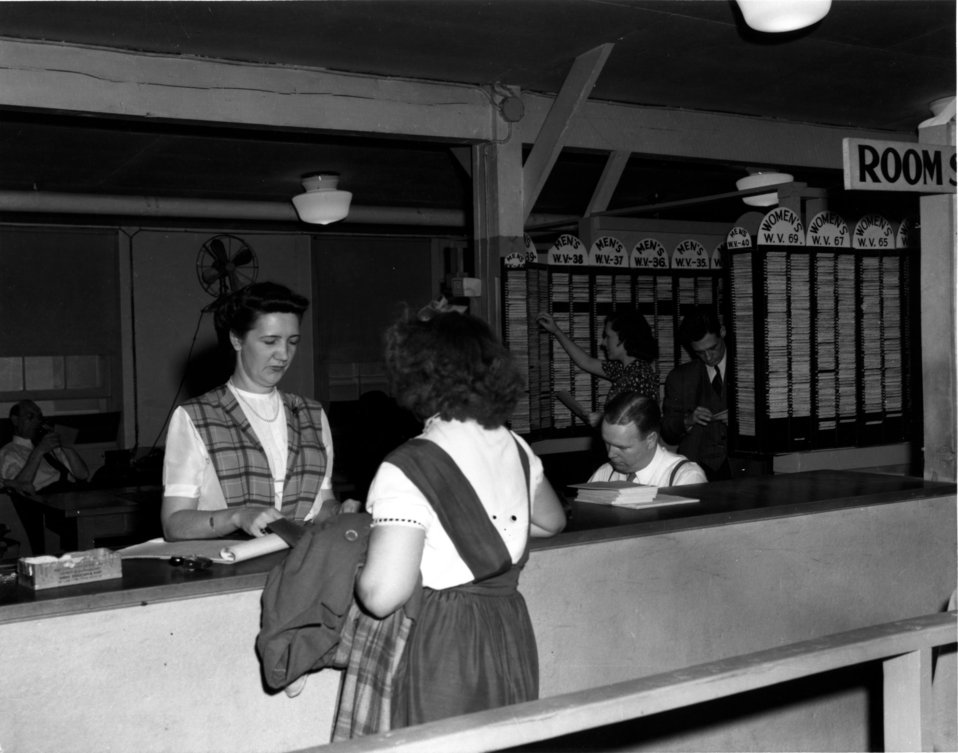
Housing at Oak Ridge